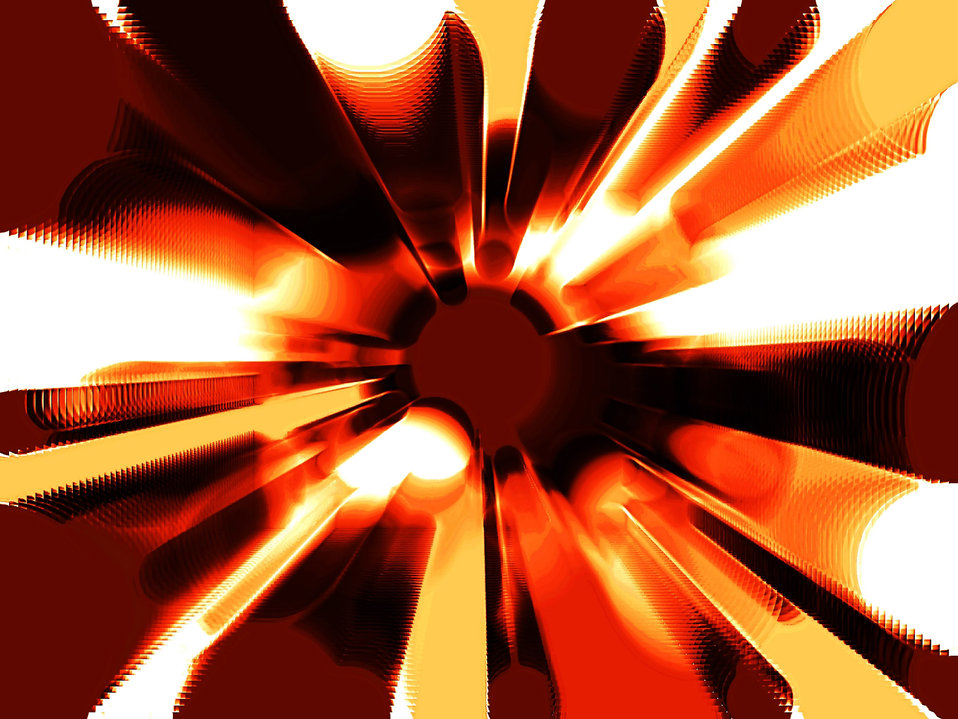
Inferno

Background zoom.